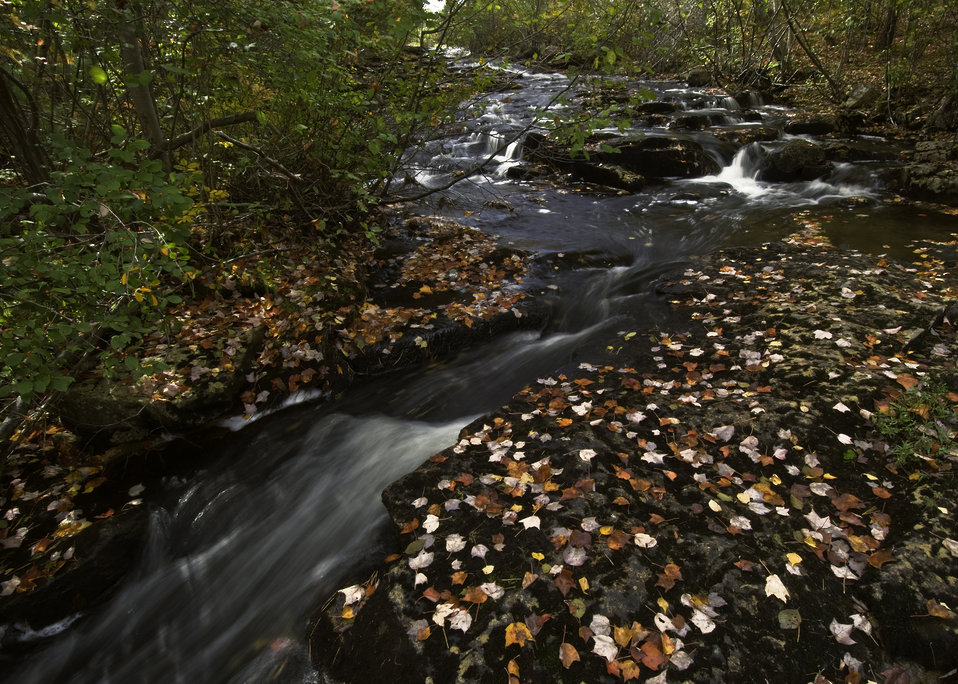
Whether along a stream or in a cabin along a lakeshore in the White Mountain National Forest in Maine, it would be difficult for a traveler not to find a site worthy of a great painting or a great photograph.